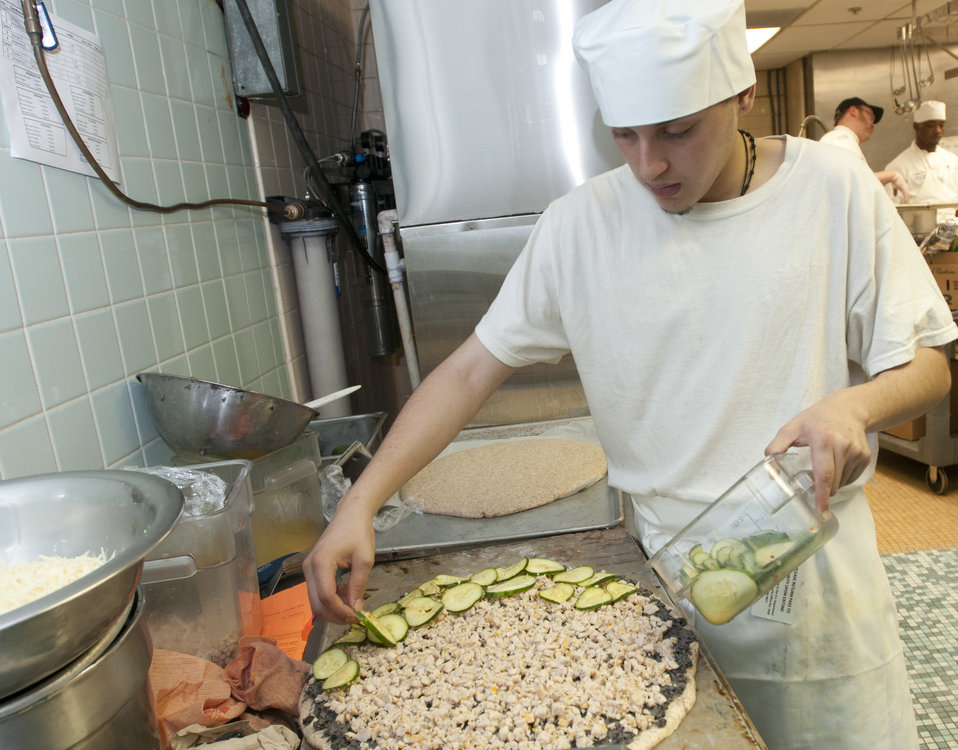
Chicago student chef Gerardo Garcia applies a layer of zucchini to the Afro-Caribe Plancha during the Cooking Up Change, National Healthy Cooking Competition at the USDA in Washington, DC, on Monday, May 23, 2011.